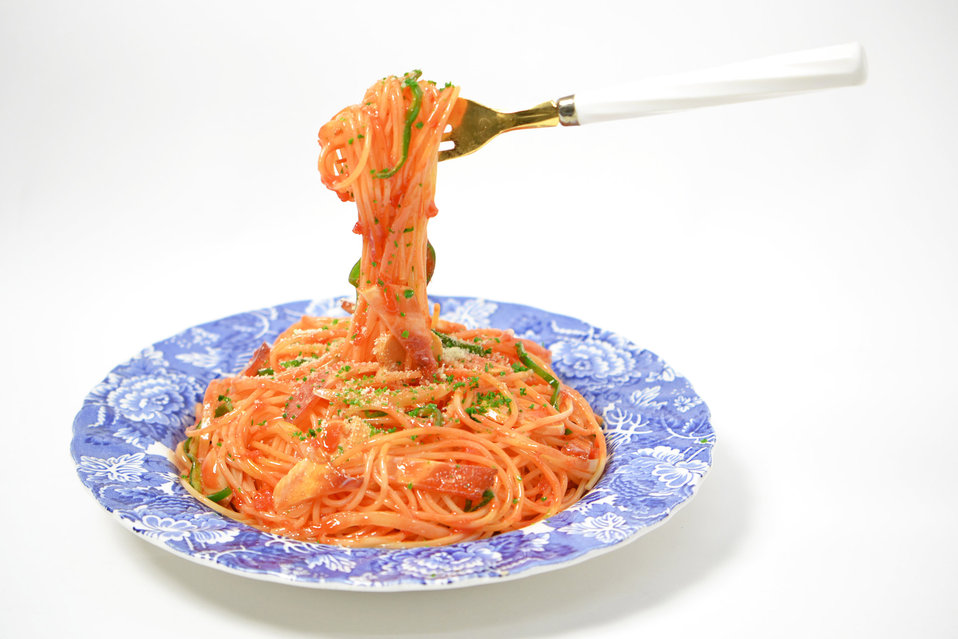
Spaghetti napolitana.